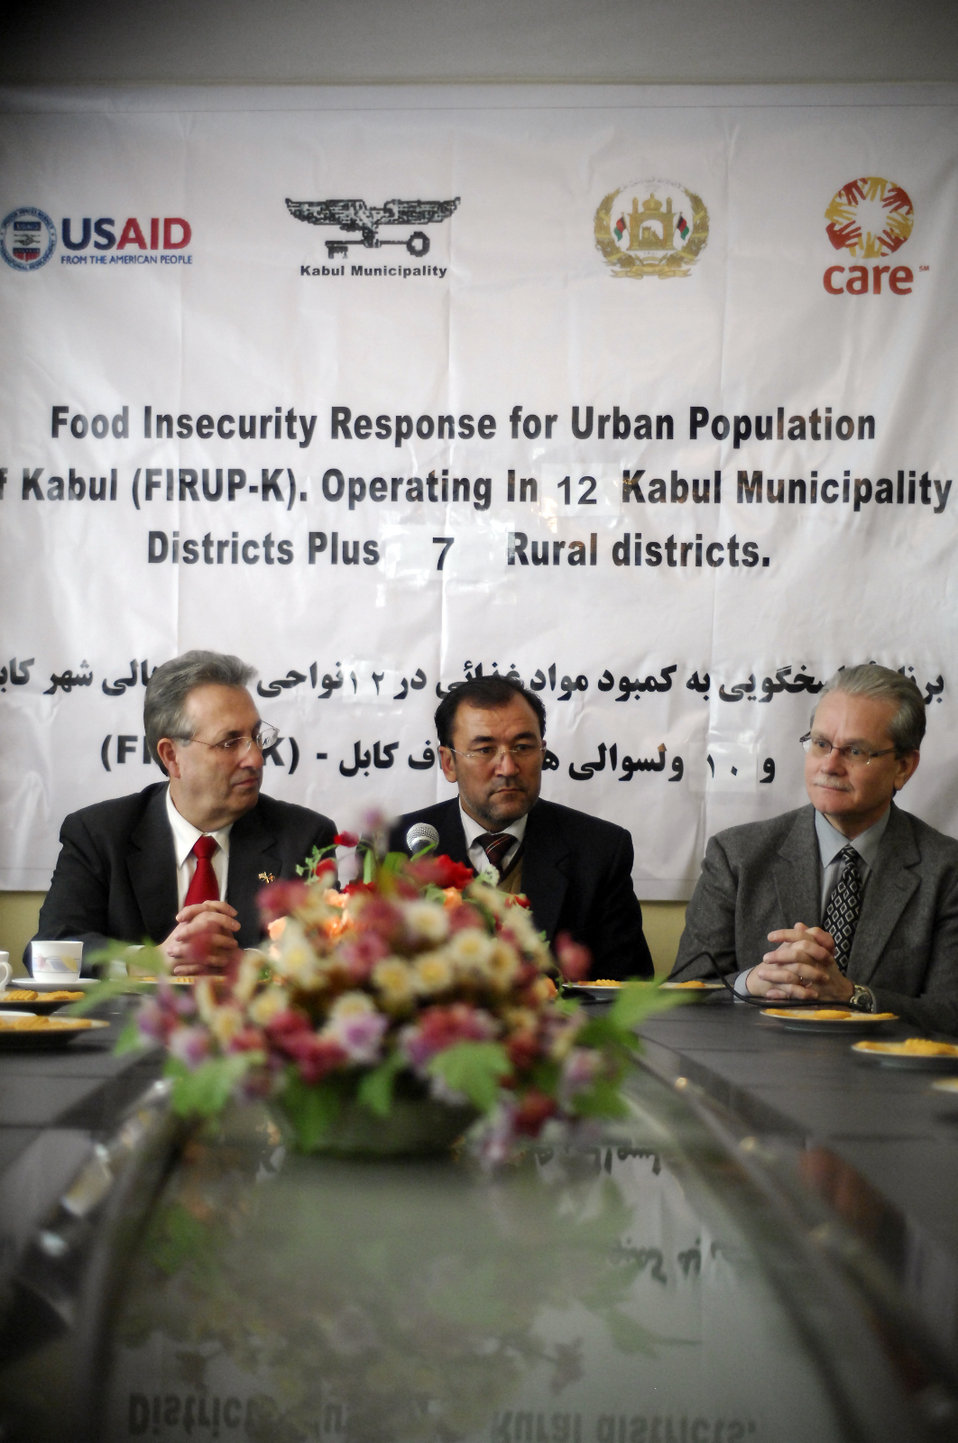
Care96 (1)